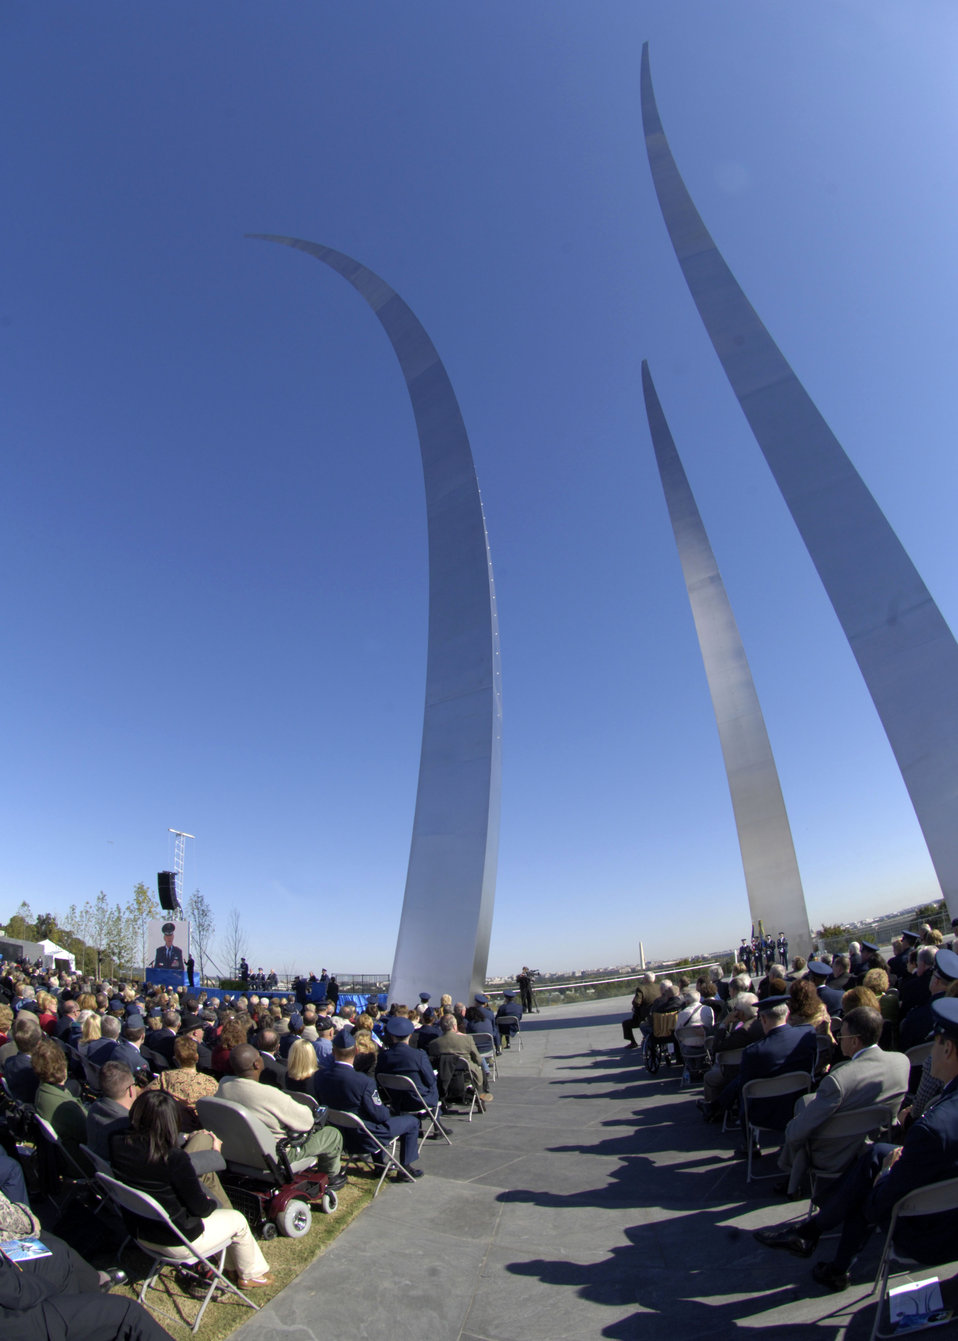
Wreath Ceremony

Hundreds gathered at the base of the new Air Force Memorial as Secretary of the Air Force Michael W. Wynne officially closed the Air Force Memorial commemoration with a wreath laying ceremony in Arlington, Va., Oct. 15, 2006. Looking on are, from left: Chief Master Sgt. of the Air Force Rodney J. McKinley, Air Force Memorial Foundation Chairman Ross Perot Jr. , and Air Force Chief of Staff Gen. T. Michael Moseley. On behalf of all American citizens President George W. Bush accepted the Air Force Memorial from Air Force Memorial Foundation Chairman Ross Perot Jr. during the previous day's dedication ceremony at the base of the Air Force Memorial that overlooks the Pentagon. Designed by the late James Ingo Freed the memorial with its three soaring spires inspired by the U.S. Air Force Thunderbirds bomb burst manuever, pays tribute to and honors the patriotic men and women of the U.S. Air Force and its predeccessor organizations. An open house was held near the Pentagon in conjunction with the dedication ceremony which featured performances by the U.S. Air Force Band, the U.S. Air Force Honor Guard drill team, and culminated with a concert featuring country music performer LeeAnn Womack.